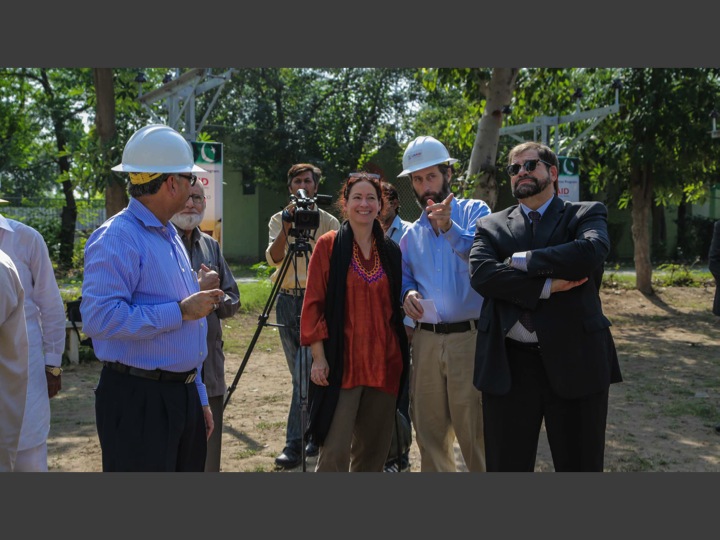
RTC Principal, Ms. Melissa Knight, Mr. Jeffrey Bakken watching the quick impact training demo